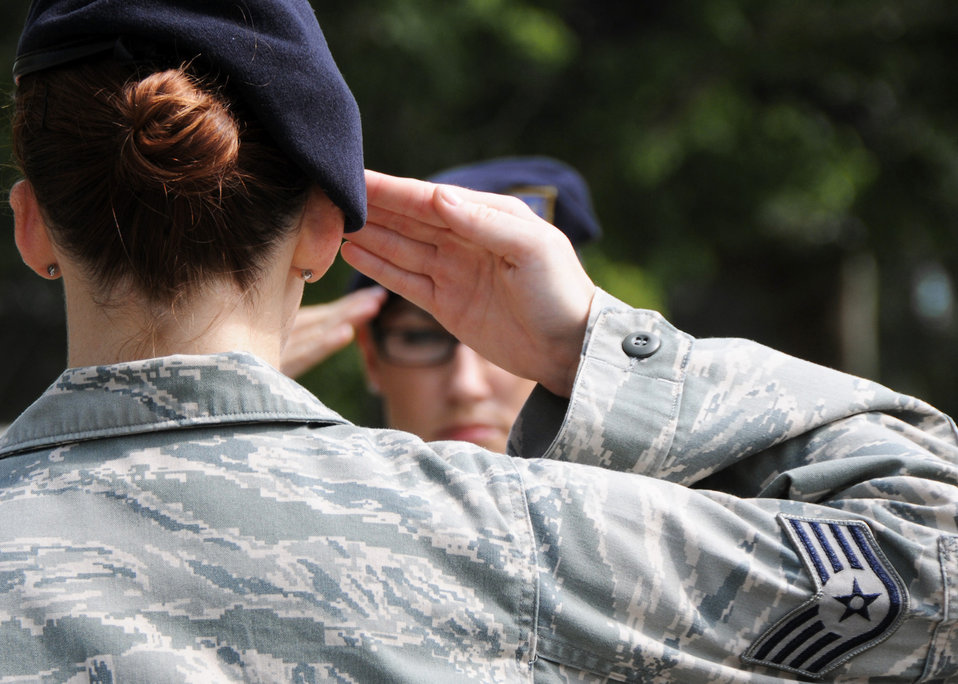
Honoring the flag

Members of the 919th Security Forces Squadron salute during a flag-raising ceremony July 11, 2010, at Duke Field, Fla.